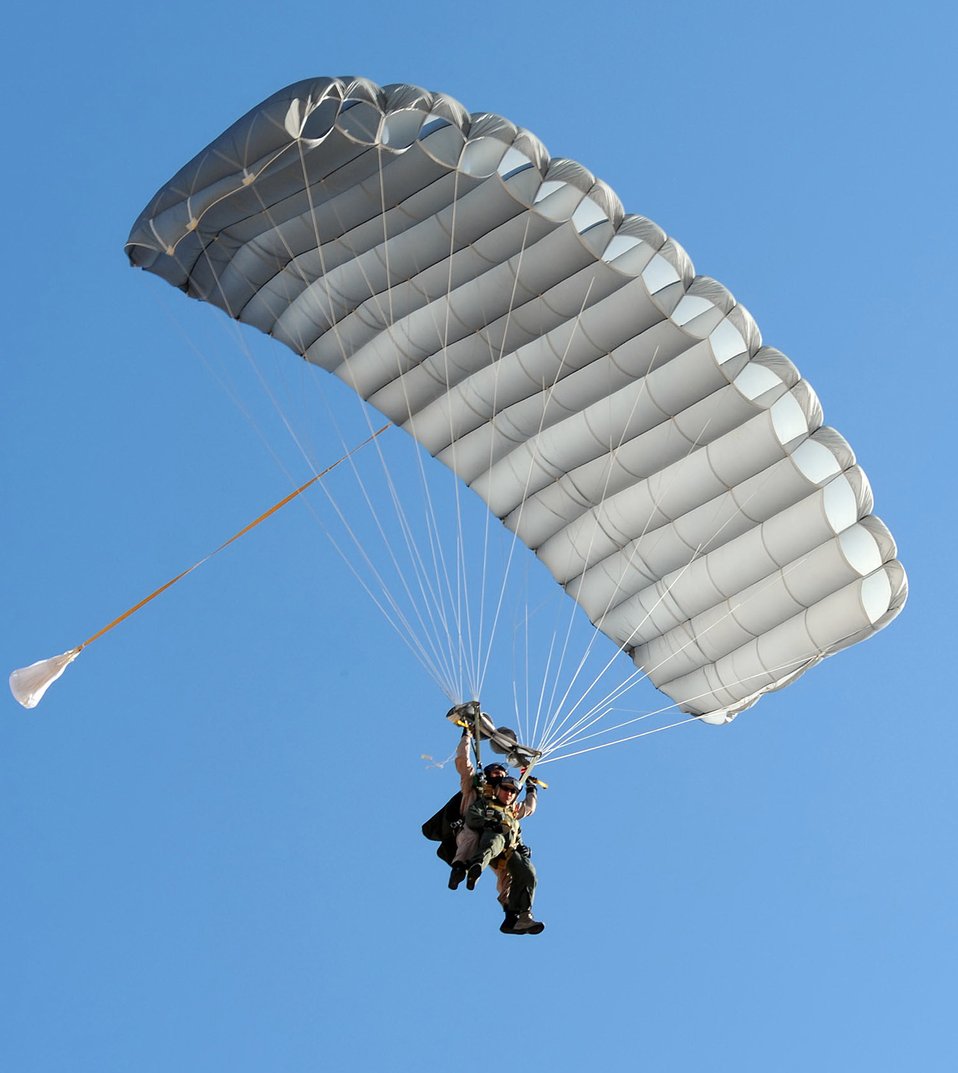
Multi-lift airdrop at Davis-Monthan AFB

Chief Master Sgts. James Sanchez (front) and Chris Tellsworth tandem jump to the drop zone Aug. 15 at Davis-Monthan Air Force Base, Ariz. The Airmen, who are assigned to the Air Force Reserve Command's 306th Rescue Squadron, were participating with members of the 79th Rescue Squadron in the first multi-lift HC-130 airdrop here.